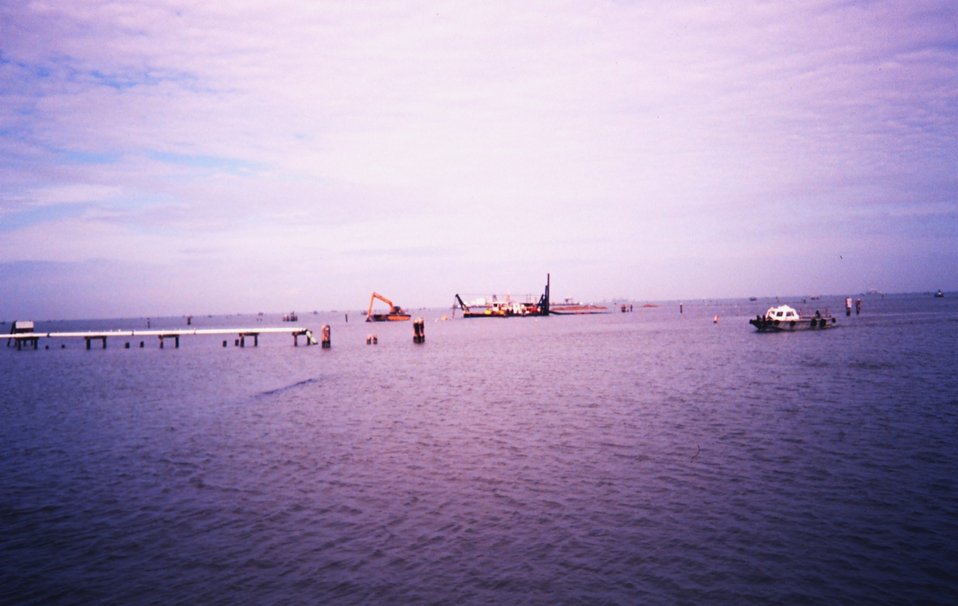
The Greenhill/East Timbalier dredge -- dredging in a channel to build new land for marsh habitat.